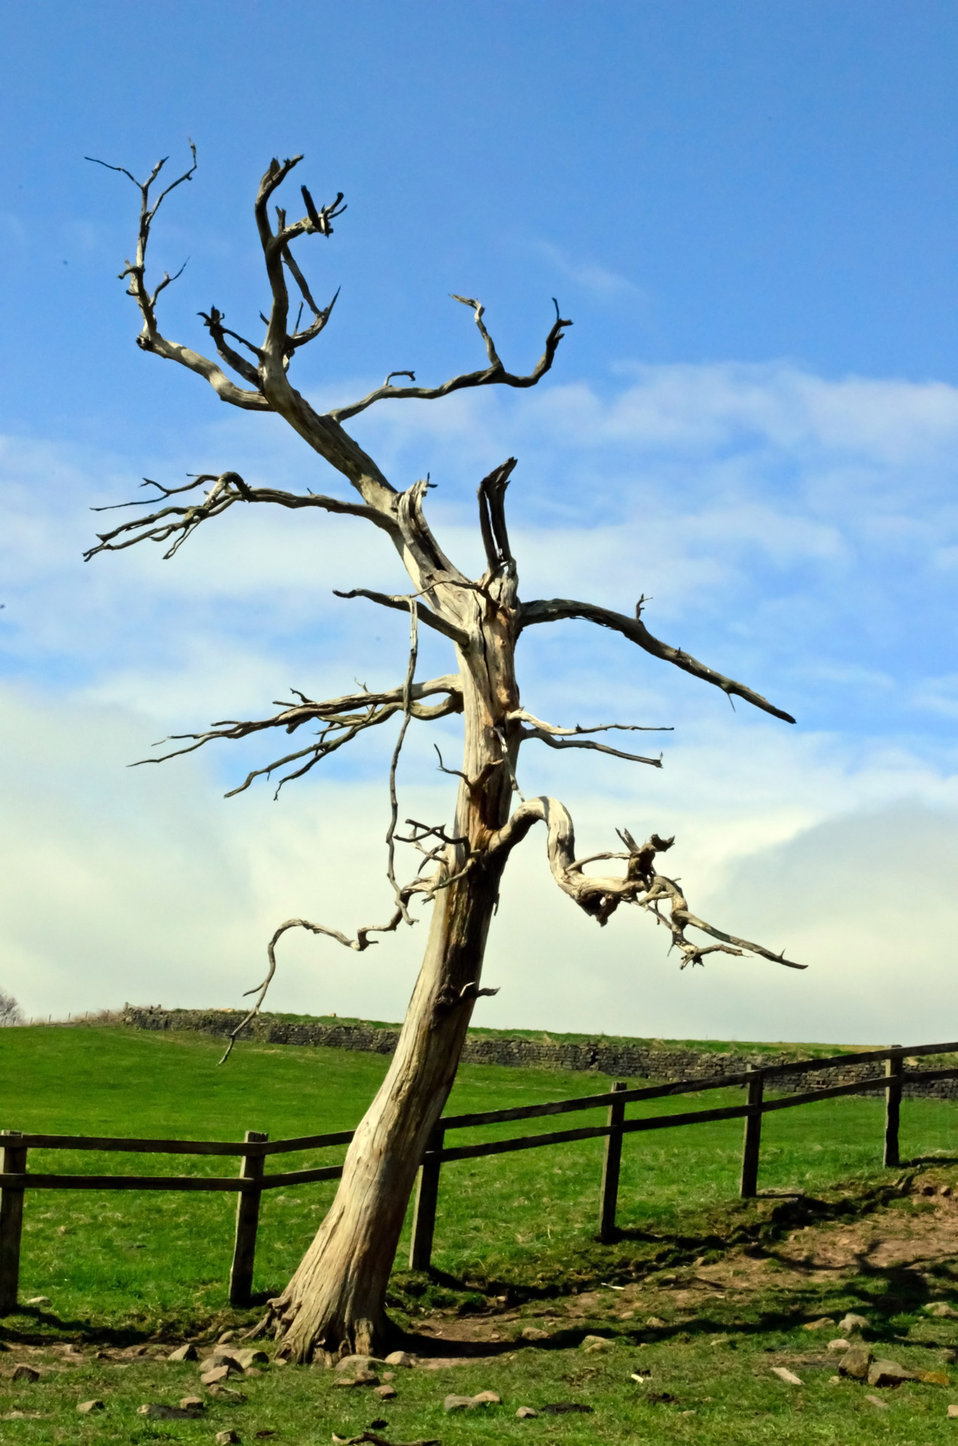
Dry tree - nature.